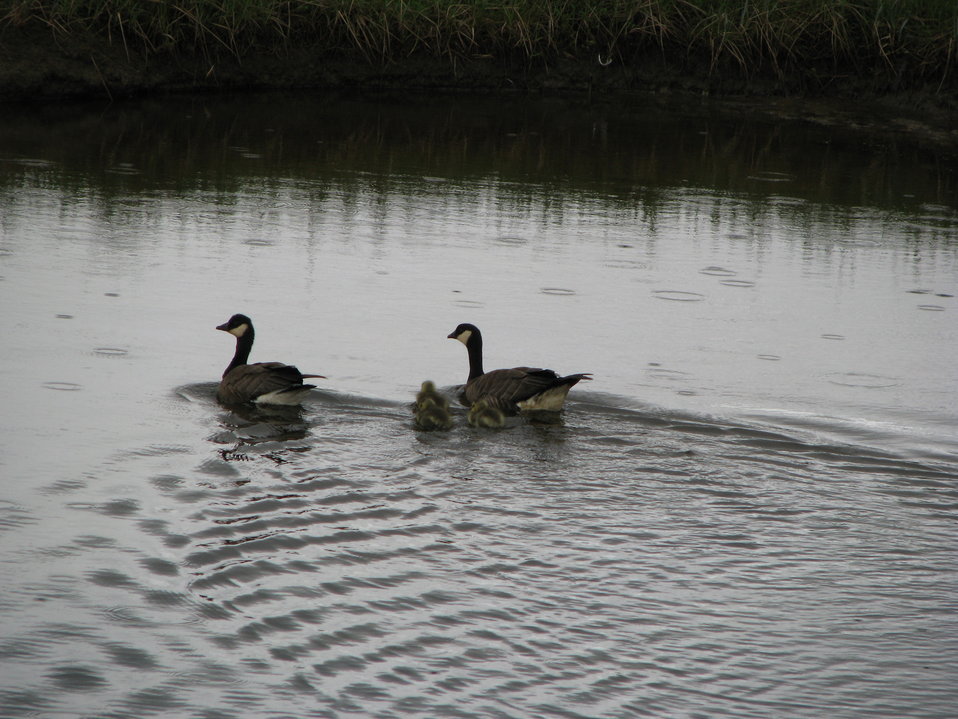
Family of cackling geese

Yukon Delta NWR